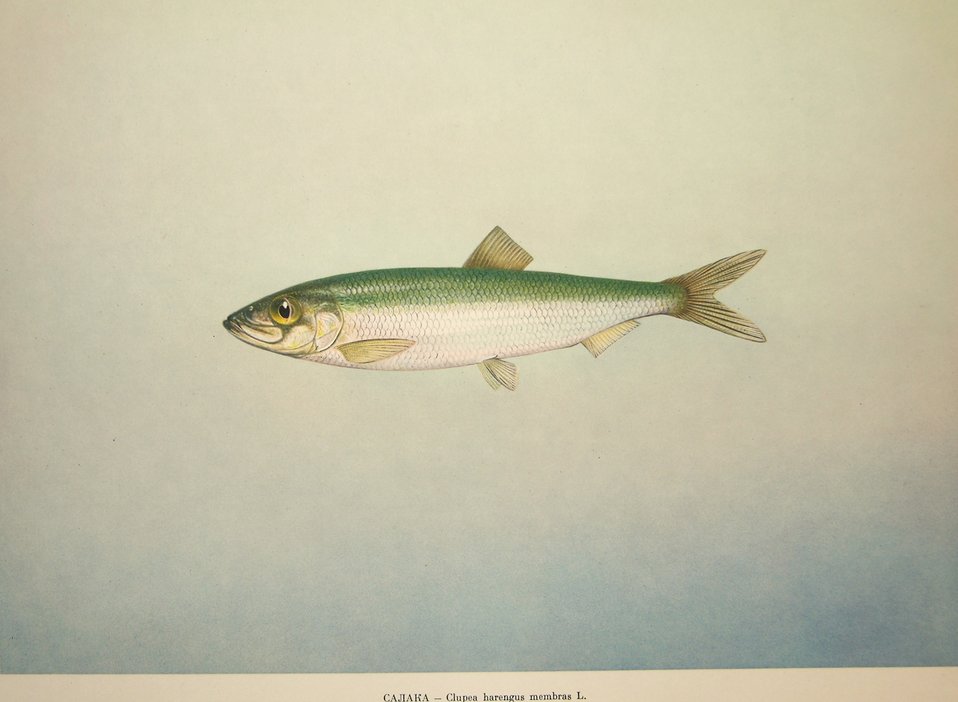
Plate 31. Clupea harengus membras L. Family Clupeidae. In: Fishery Resources of the USSR, N.N.Kondakov, Artist Editor. 1957. NOAA Central Library Call Number: SH91.R9 1957.